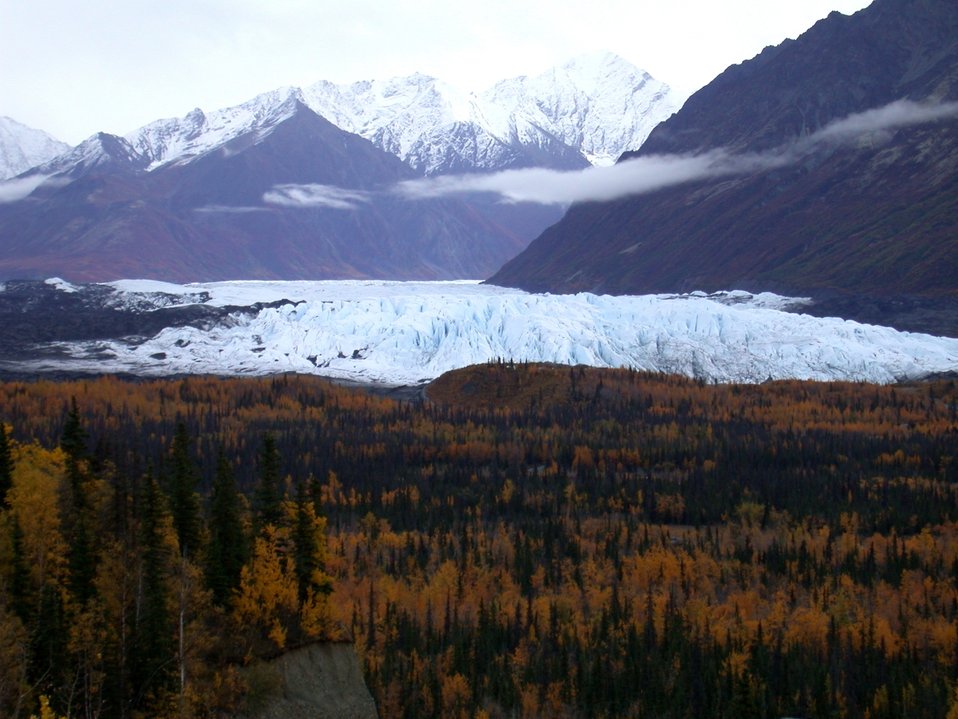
A glacier's front seen over the trees which have established themselves on glacial moraine material.